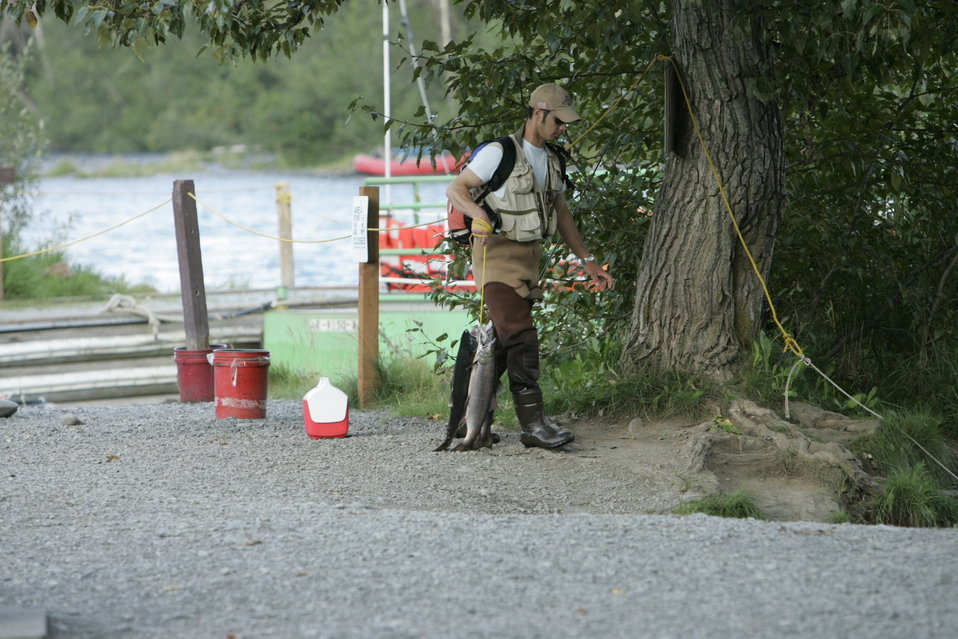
Returning on the Ferry With a Days Catch

An angler returns from the south bank of the Kenai where he has successfully landed a nice stringer of bright red (sockeye) salmon.